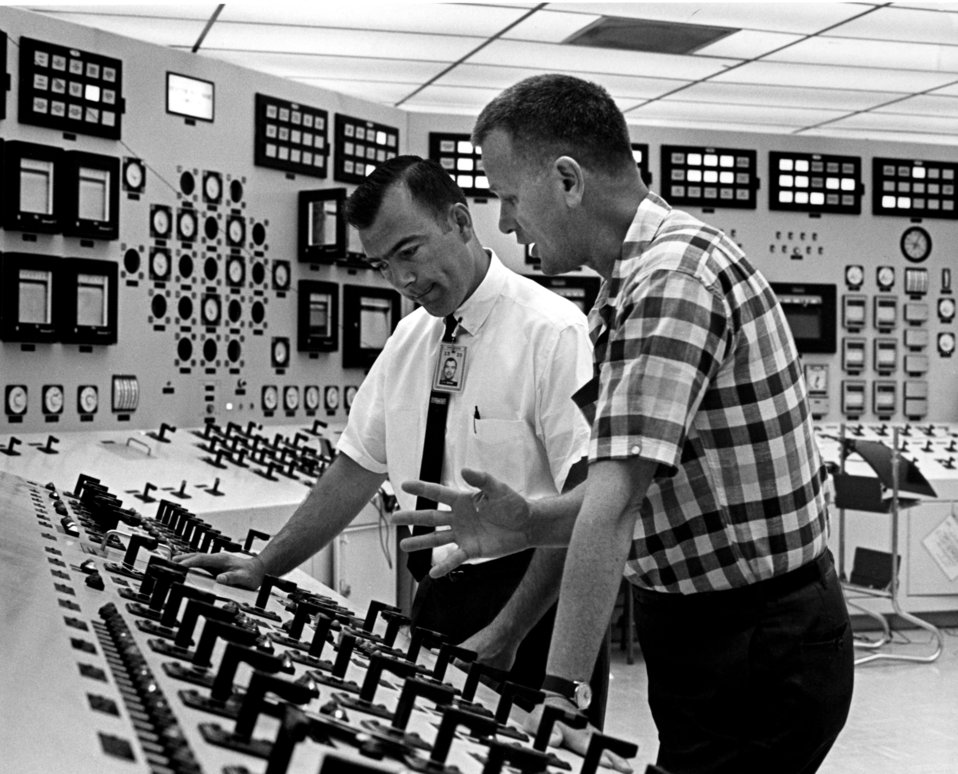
Peers Training Program Oak Ridge

65-0352-24 DOE photo Ed Westcott 6-1-1965 Oak Ridge Tennessee